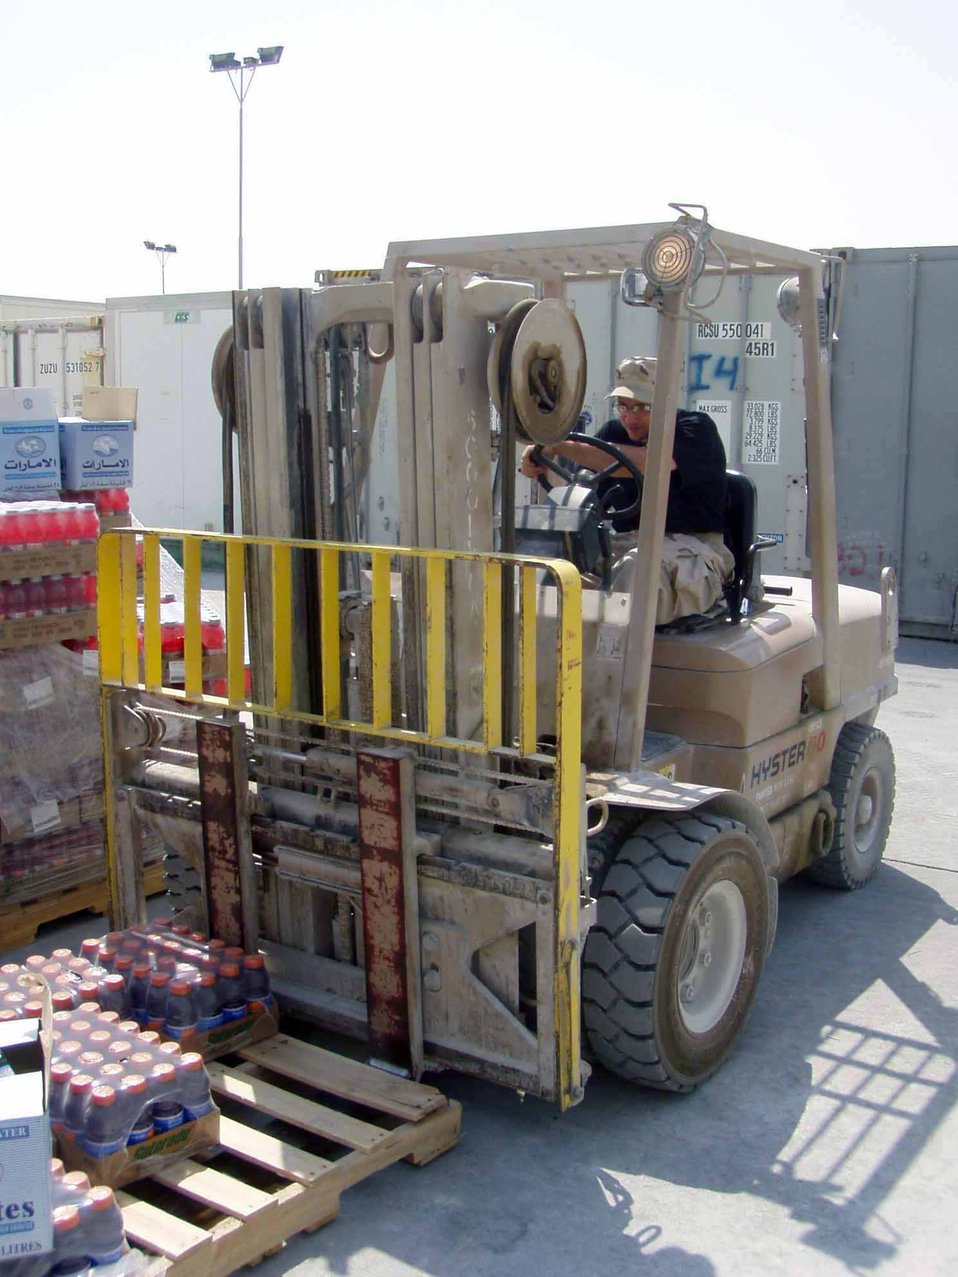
Services serves up thousands of feasts

SOUTHWEST ASIA -- Staff Sgt. Marcus Wilson moves pallets behind one of four dining facilities at a forward-deployed location. The food services flight encompasses all aspects of running the second largest food service operation in the Air Force including ordering, stocking, preparing and serving the food. Sergeant Wilson is from Eglin Air Force Base, Fla.